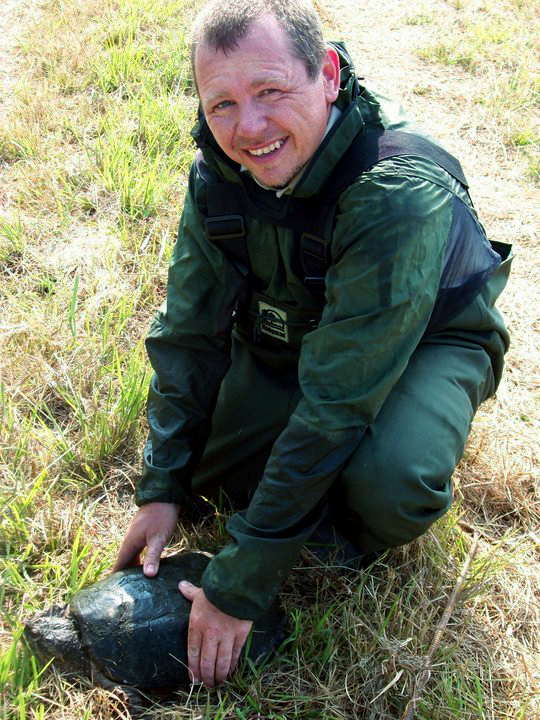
Raeth Morgan

Raeth J. Morgan, a Biological Science Technician at the Blackwater National Wildlife Refuge in Maryland served for 13 years in the U.S Army as a combat engineer. He was stationed in the USA, Germany and Korea. Due to injuries, he had to leave the military and is now with the Service.